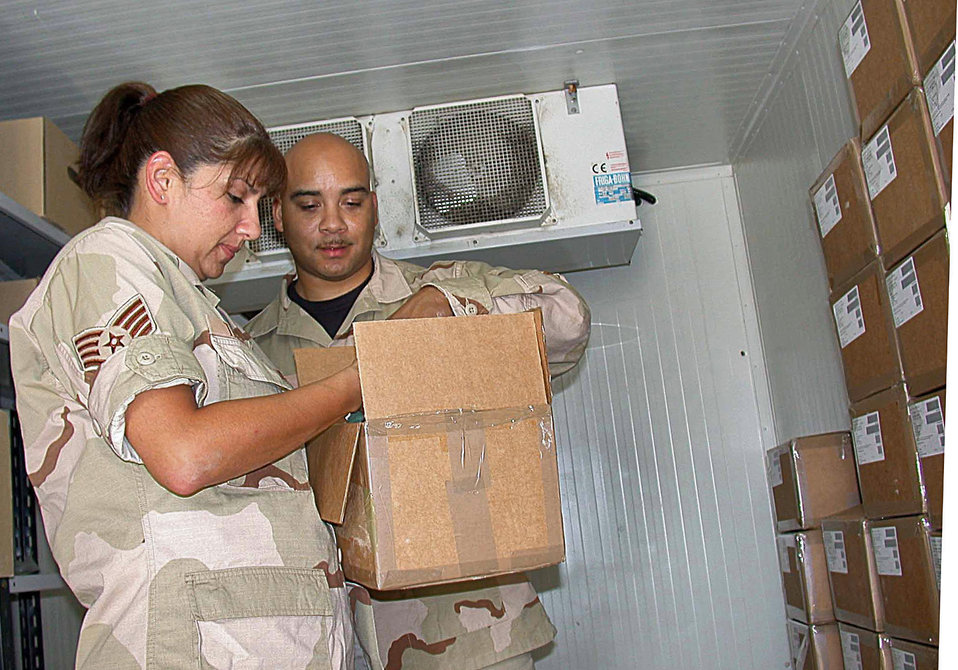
Operation Iraqi Freedom

SOUTHWEST ASIA (AFPN) -- Staff Sgt. Tamara Thiecke (left) and Tech. Sgt. Rhan Williams, 379th Expeditionary Medical Squadron medical logistics technicians, check the serviceability of a medical item. The 379th EMEDS medical logistics flight maintains more than $200,000 worth of medical supplies and $2.3 million worth of medical equipment.